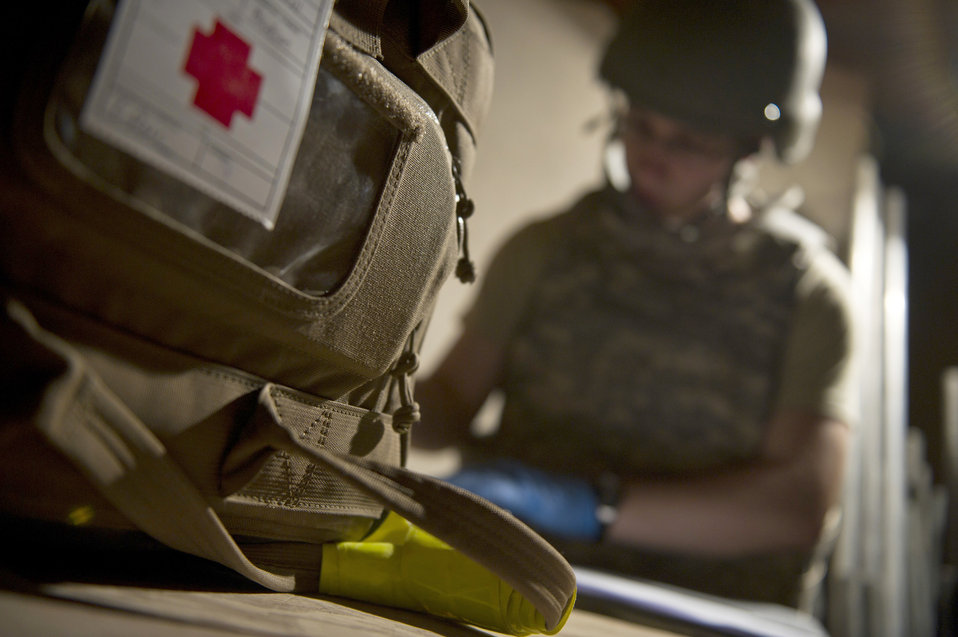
Making preparations

Airman 1st Class Dennis Nellessen performs a baggage check prior to loading patients onto an aircraft May 26, 2011, at Camp Bastion, Afghanistan. Airman Nellessen is an aerospace medical technician assigned to the 451st Expeditionary Aeromedical Evacuation Squadron.